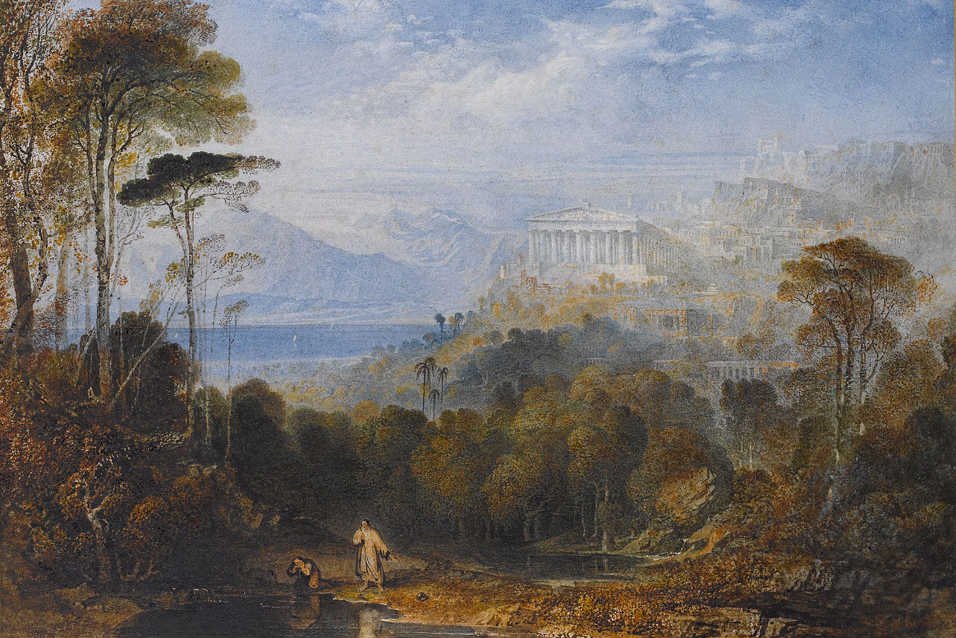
'Diogenes Throwing Away His Cup', oil on canvas painting by John Martin